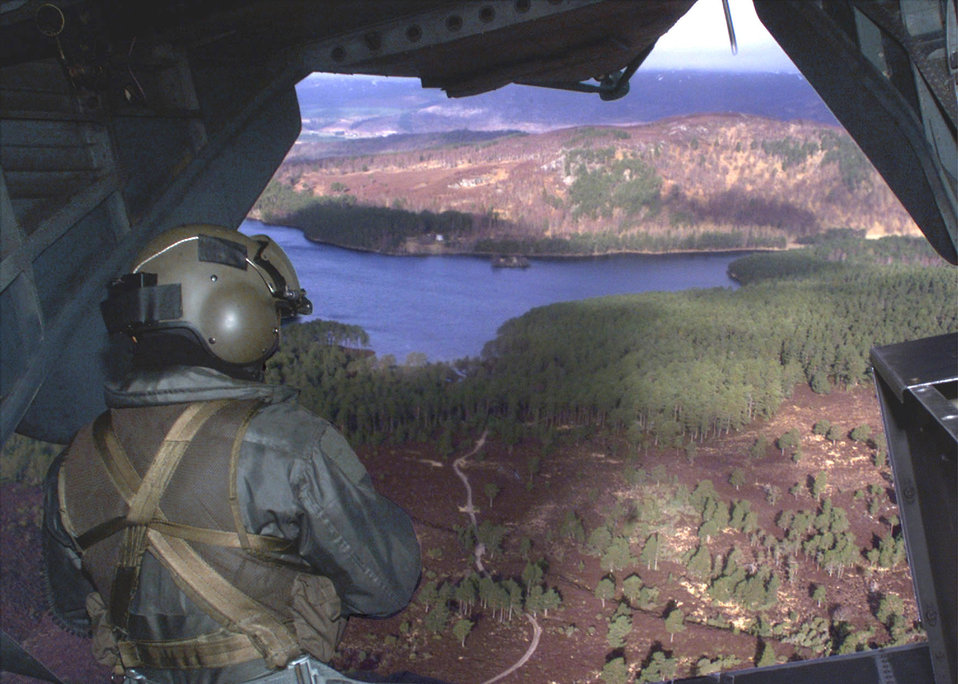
The weather is good

FILE PHOTO -- Staff Sgt. Doug Vachon, an MH-53 Pave Low helicopter aerial gunner sits at the tail of the aircraft to notify the pilot of any changes in the weather. Vachon and the aircraft are assigned to the 21st Special Operations Squadron, 352nd Special Operations Group, Royal Air force Mildenhall, United Kingdom. The aircraft and crew deployed to Kinloss to assist in the recovery of the two downed Royal Air Force Lakenheath F-15C aircraft that went down in the Scottish Highlands.